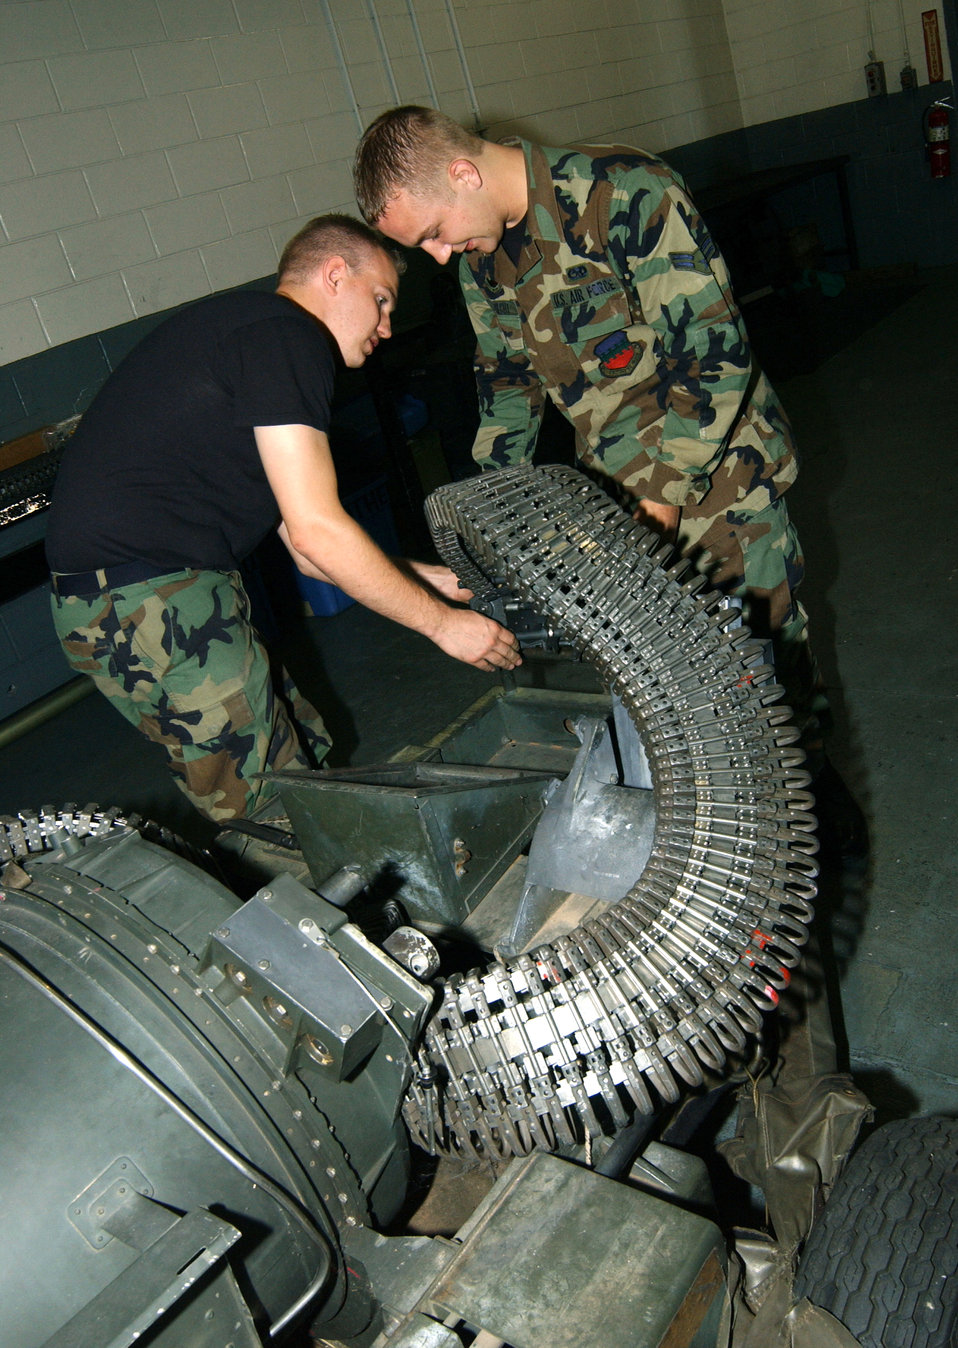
The missing link

SHAW AIR FORCE BASE, S.C. -- Airmen 1st Class Narley Wright and Brandon Liebrecht perform a linkage adjustment on a universal ammunition loading system here Sept. 22. Both Airmen are assigned to the 20th Equipment Maintenance Squadron.